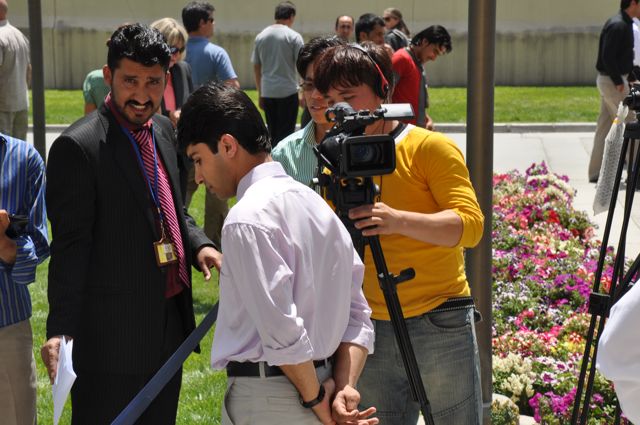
Memorial Day at US Embassy in Kabul